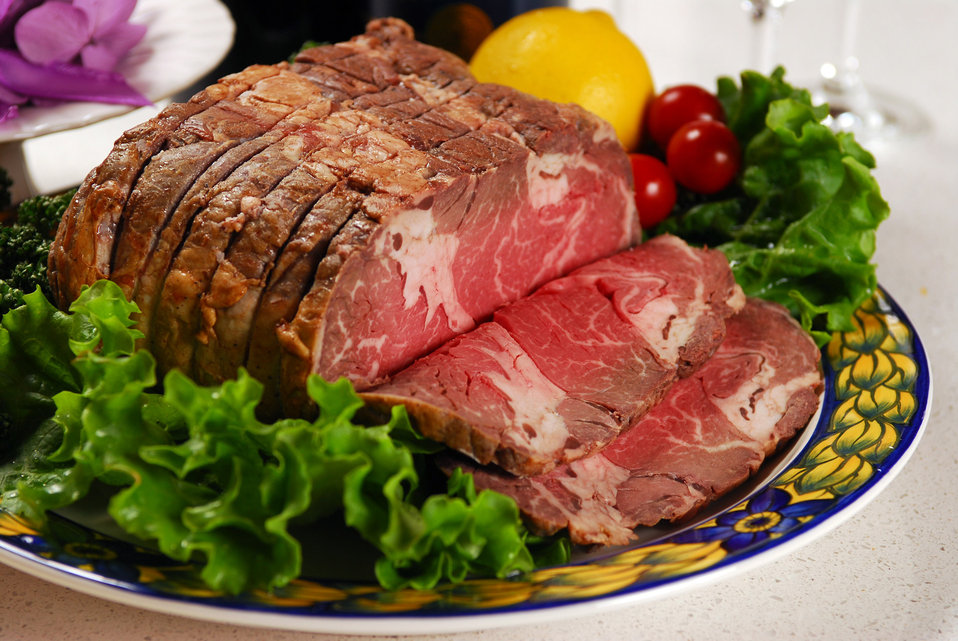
A chunk of beef 2

A chunk of beef.